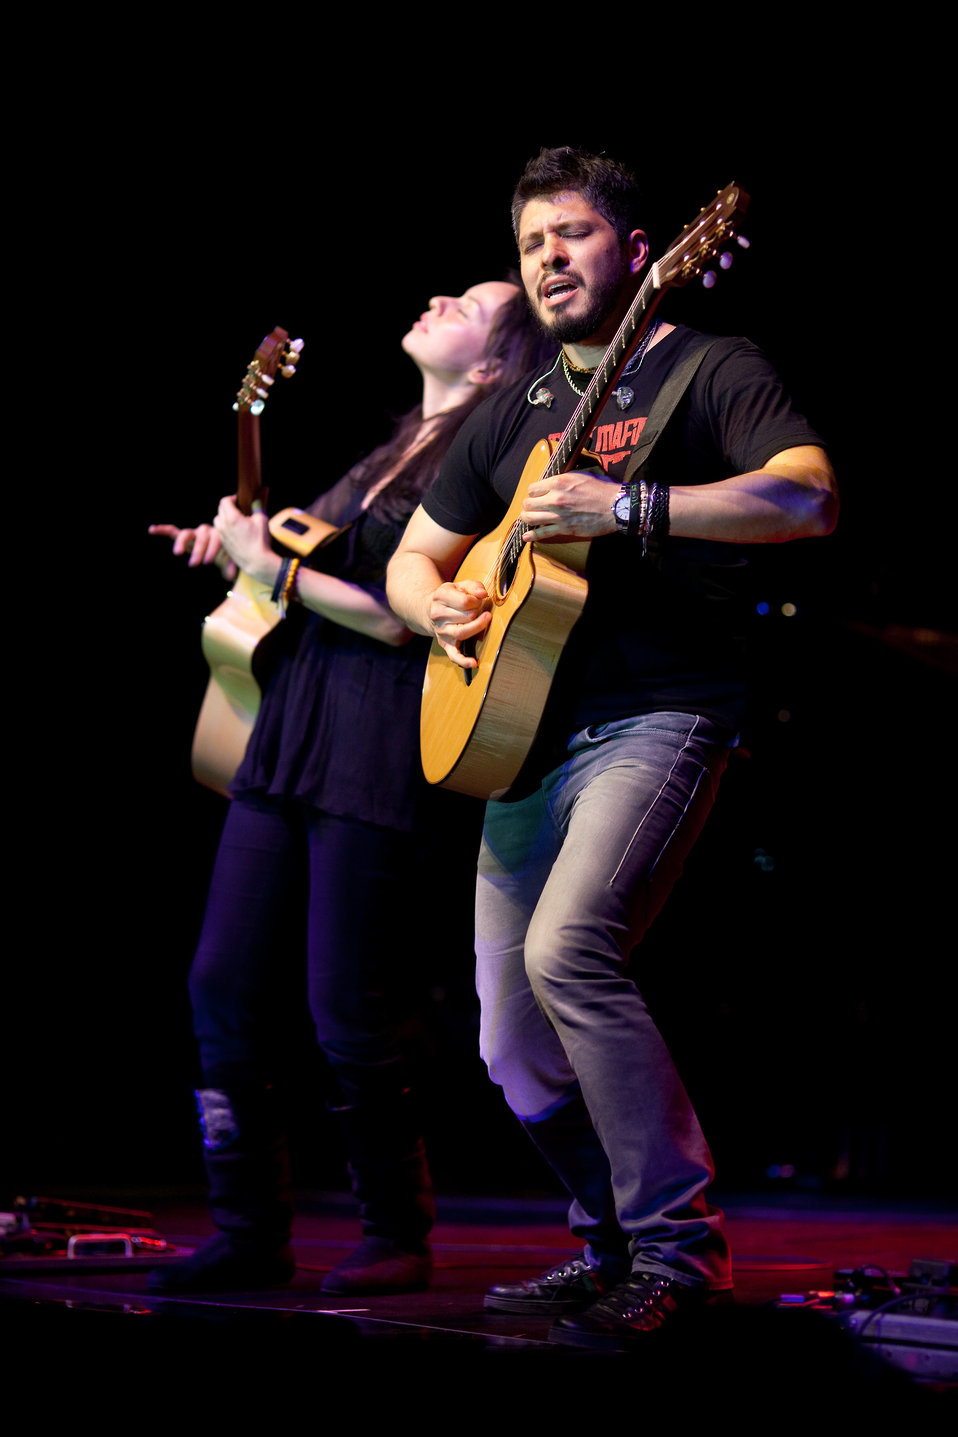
Rodrigo y Gabriela perform during the State Dinner reception for President Felipe Calderón of Mexico and his wife, Mrs. Margarita Zavala, in a tent on the South Lawn of the White House, May 19, 2010.